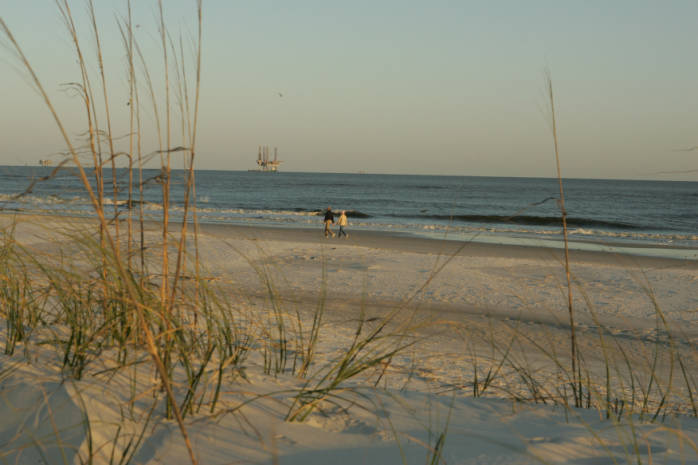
Beach with oil well off shore Credit: USFWS